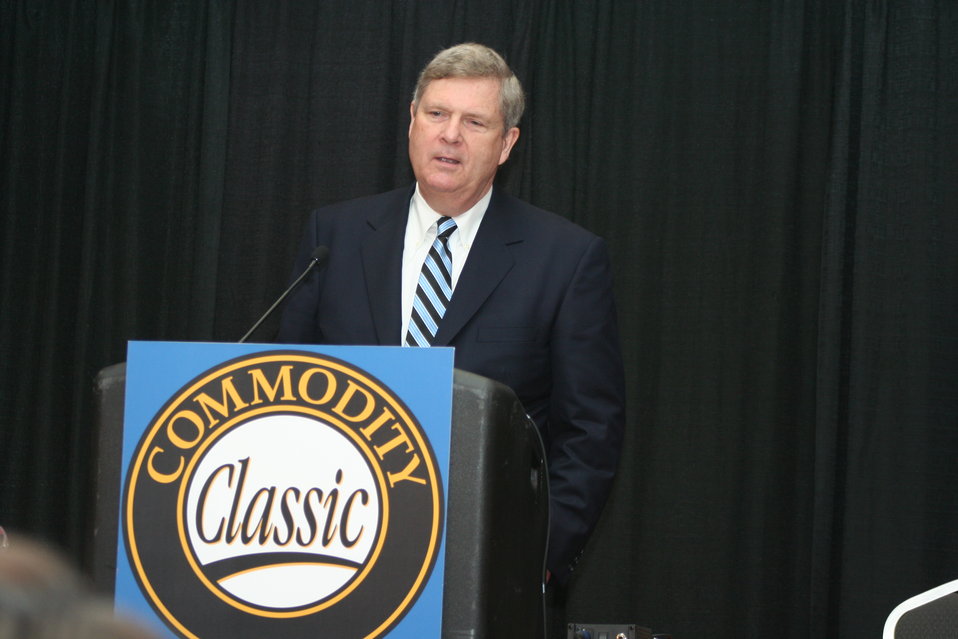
Agriculture Secretary Tom Vilsack discuses the Agricultural Act of 2014 at the Commodity Classic general session in San Antonio, TX on Friday, Feb. 28, 2014. The annual Commodity Classic is open to all corn, soybean, wheat and sorghum growers, member associations, agribusiness, and farm media. It is a farmer-focused and farmer-led convention and trade show.